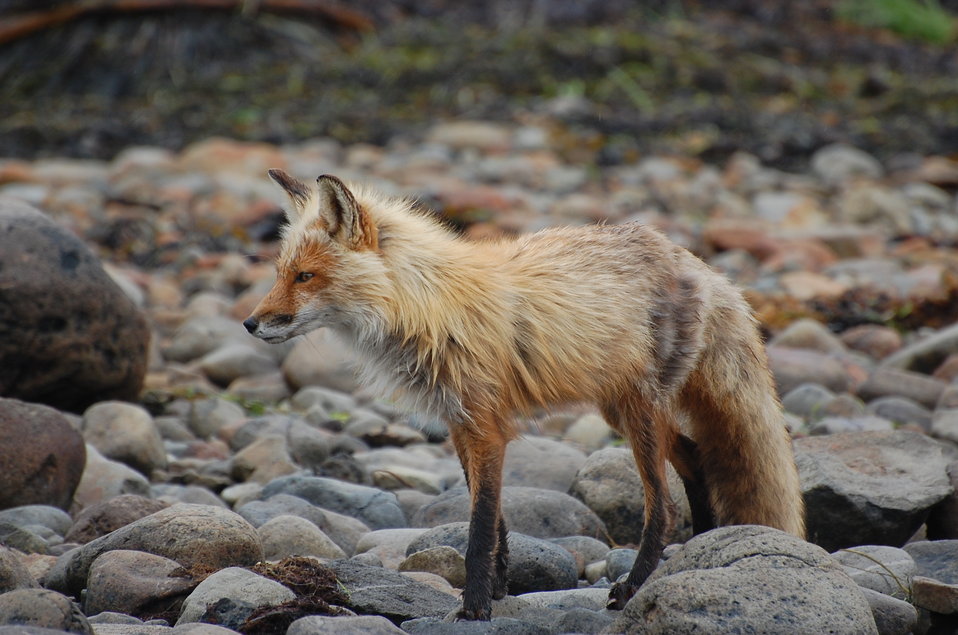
Red Fox

near Kinzarof Lagoon, Izembek National Wildlife Refuge